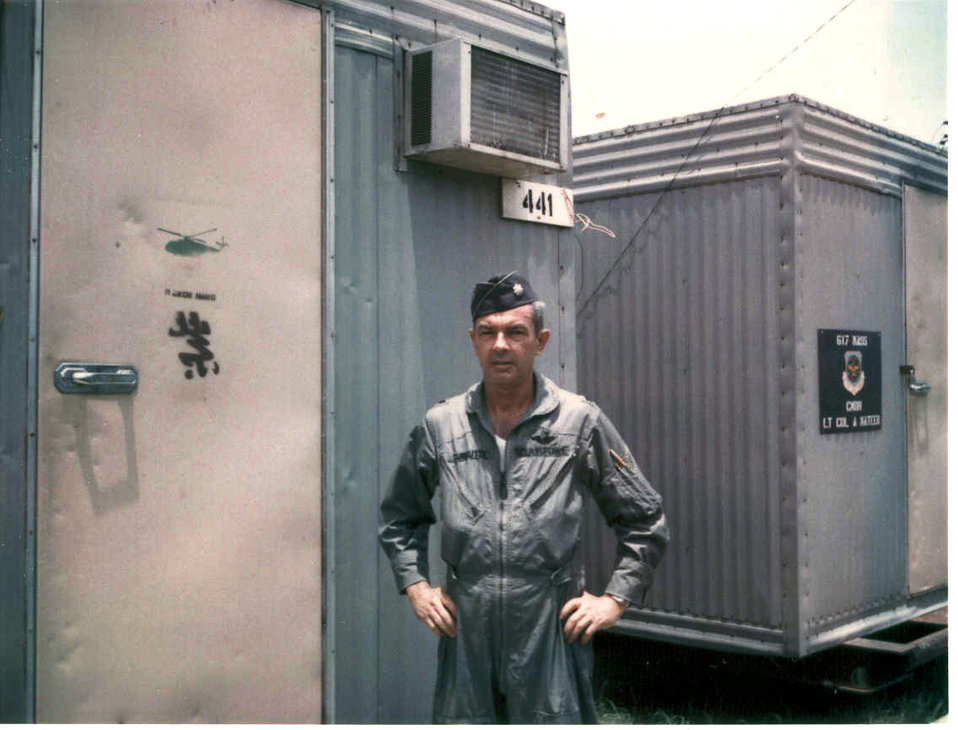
Honoring a hero: a son's final tribute to his father

Lt. Col. Bill Curnutte paused for a quick photograph outside the trailer where he lived at Da Nang Air Base, South Vietnam, before taking off for a combat mission. Troy Curnutte, the colonel's son, lobbied the Air Force to present his father a Distinguished Flying Cross for his heroic actions during a January 1969 rescue mission over Laos.